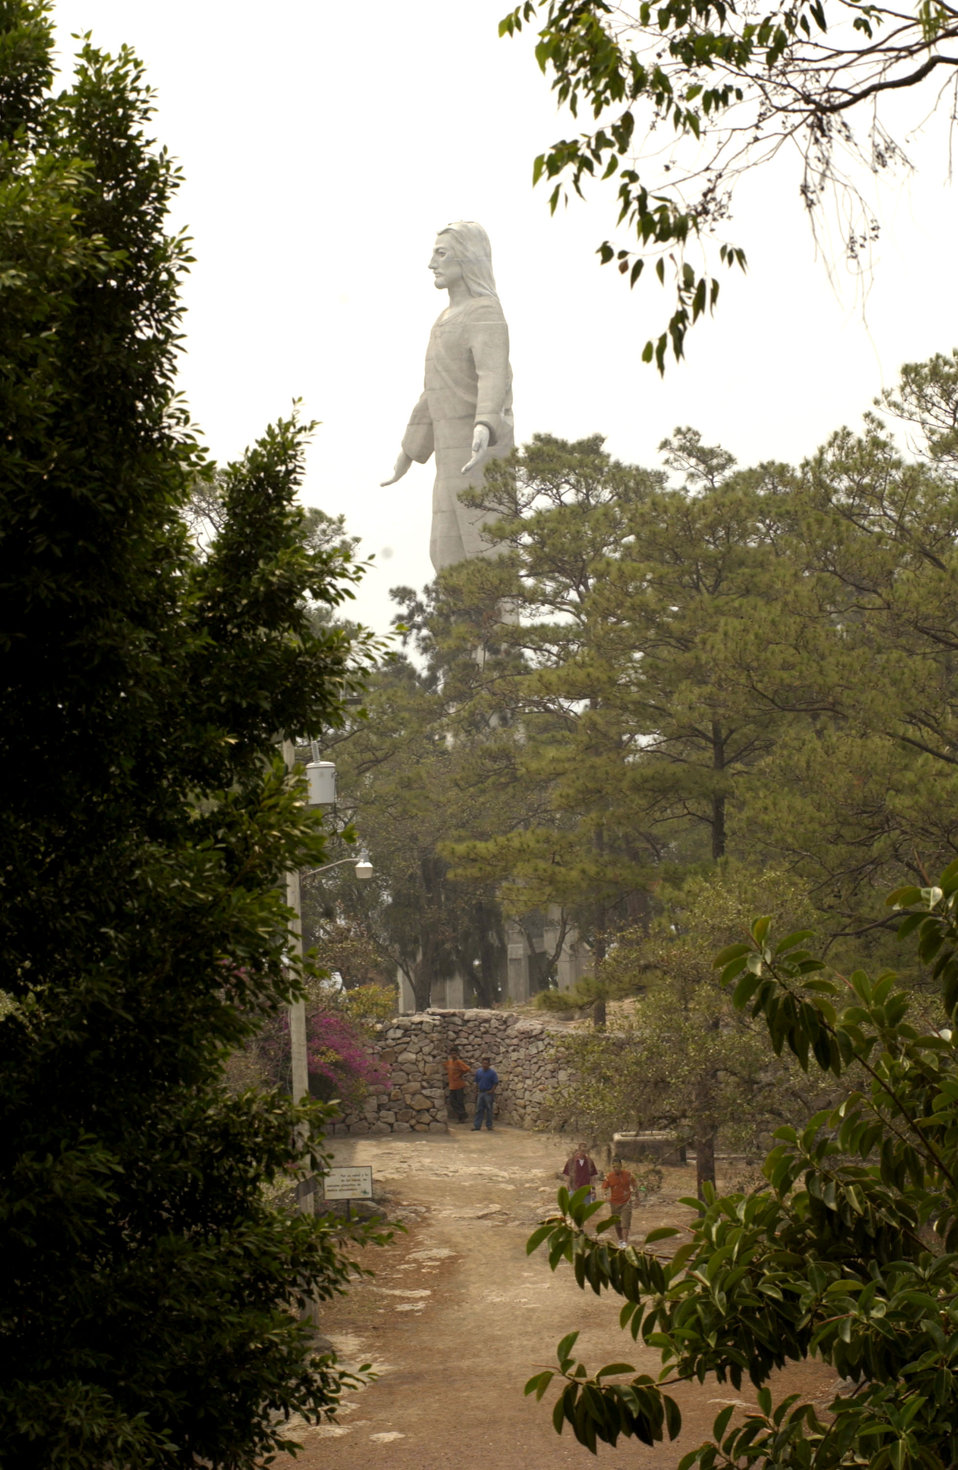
For U.S. troops, Tegucigalpa's good life has its dangers

TEGUCIGALPA, Honduras - One of the sights Capts. Dan Beard and Cliff Bayne took in while touring the capital city was a park high on a mountain. There, a huge statue called Christ on El Picacho, overlooks the city below.